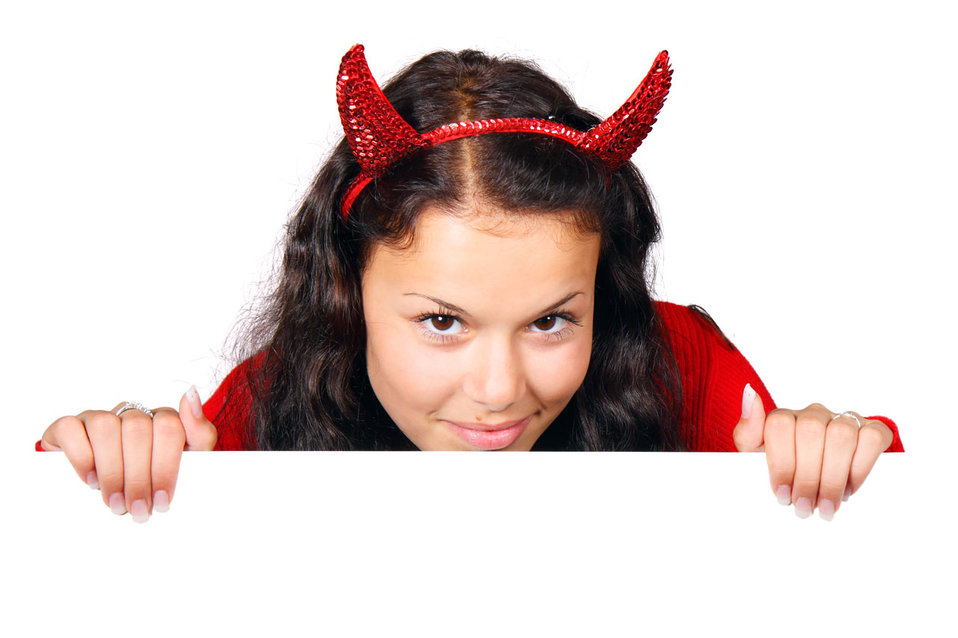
Sexy devil

Sexy red devil behind white board.